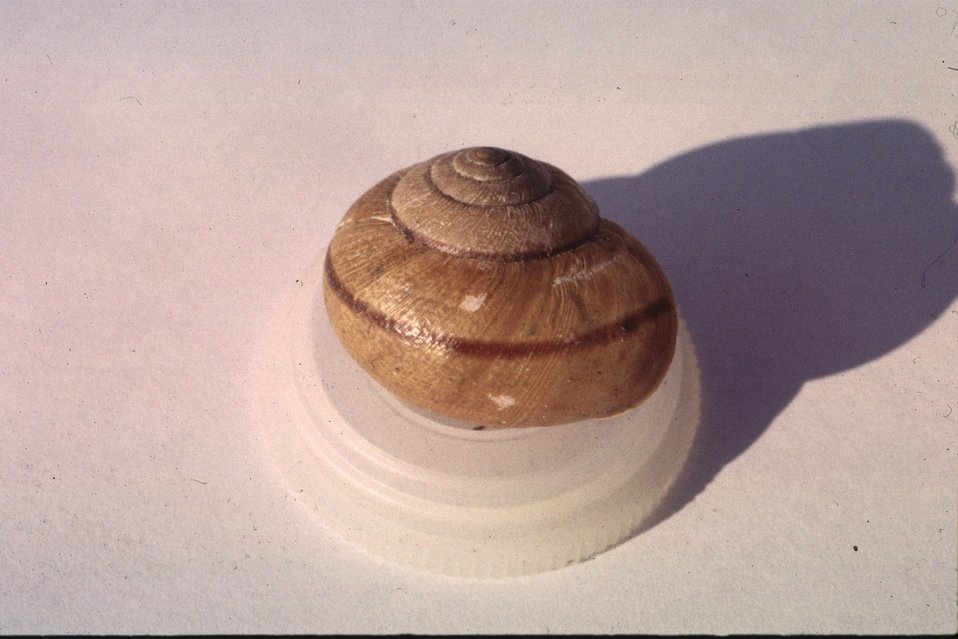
Klamath Shoulderband (Helminthoglypta talmadgei).